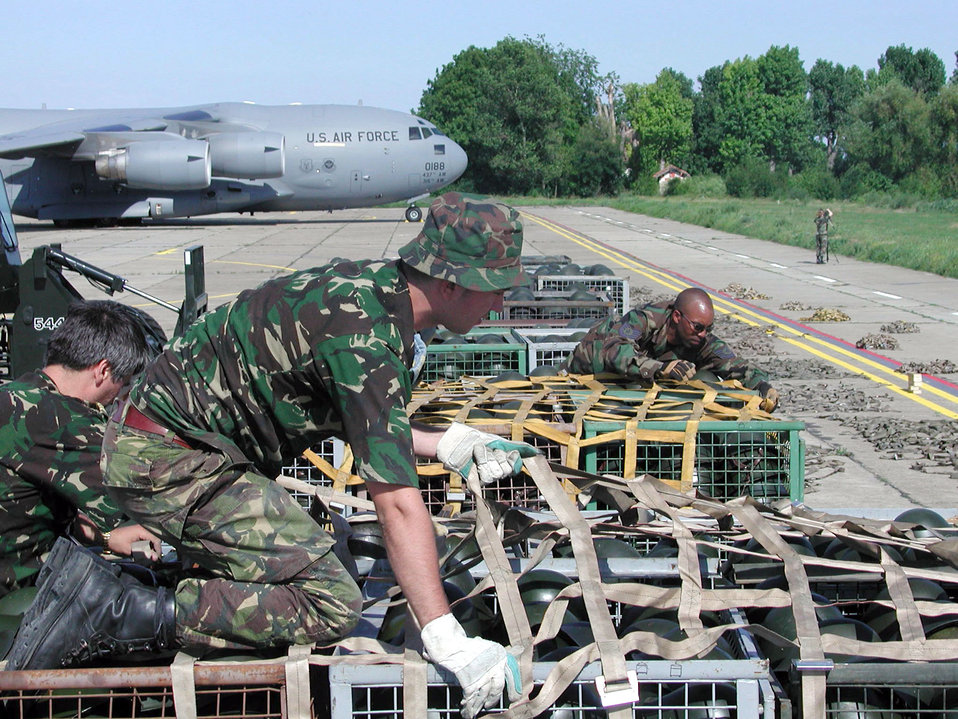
Airmen deliver 35,000 helmets to Afghanistan

MIHAIL KOGALNICEANU AIR BASE, Romania -- Tech. Sgt. Loren Lawyer (right) helps Romanian airmen pack 35,000 helmets donated to the Afghan army June 24. Sergeant Lawyer was part of a three-person team deployed here to help prepare the cargo for delivery. He is assigned to the 86th Air Mobility Squadron at Ramstein Air Base, Germany.